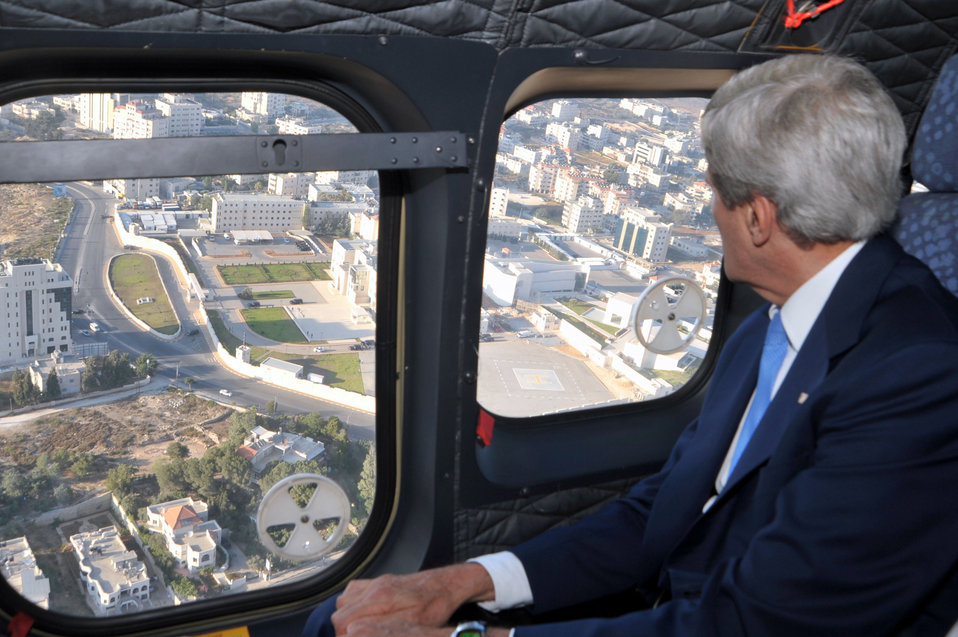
Secretary Kerry Prepares To Arrive in Ramallah

U.S. Secretary of State John Kerry looks out at the Palestinian Authority compound in Ramallah, West Bank, before a meeting with Palestinian Authority President Mahmoud Abbas on July 19, 2013.